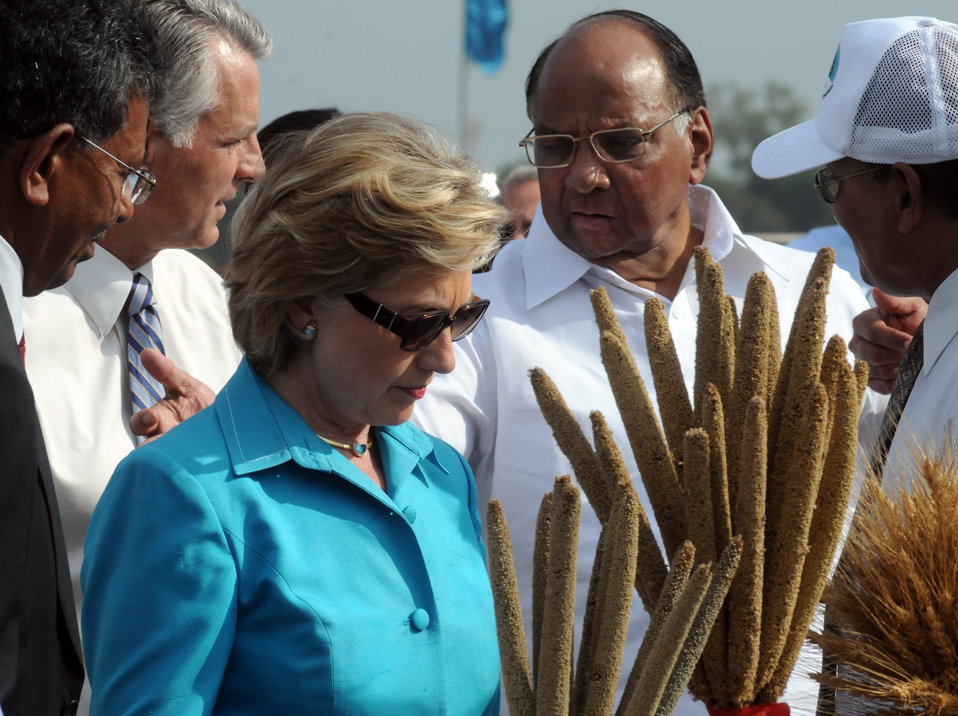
Secretary Clinton Visits Indian Agricultural Research Institute

U.S. Secretary of State Hillary Rodham Clinton, with Ambassador-Designate Timothy J. Roemer, Sharad Pawar, Minister of Agriculture, Consumer Affairs, Food and Public Distribution, and Dr. Mangala Rai, President of the National Academy of Agricultural Sciences, examines wheat samples at the Indian Council for Agricultural Research’s (ICAR) Indian Agricultural Research Institute (IARI) in Pusa, New Delhi, India July 19, 2009.